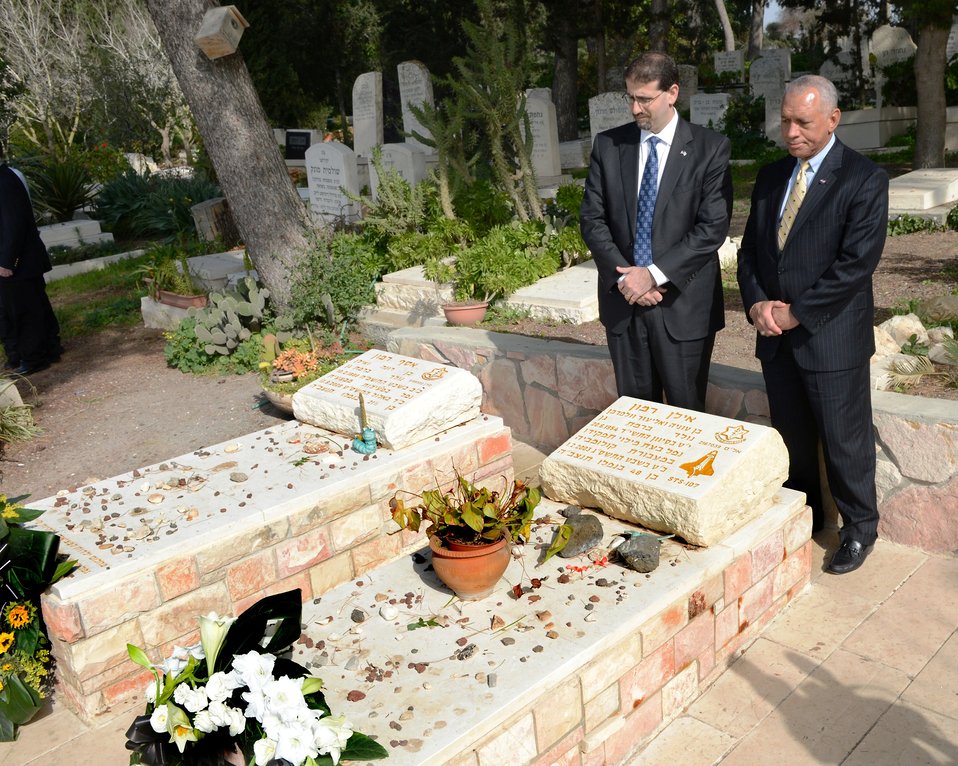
Administrator Bolden and Ambassador Shapiro Visit the Graves of of Ilan and Asaf Ramon in Nahalal Cemetery

NASA Administrator Charles Bolden and U.S. Ambassador to Israel Daniel Shapiro visit the graves of Ilan and Asaf Ramon in Nahalal Cemetery and lay a wreath on January 28, 2013. The Administrator is on a four-day visit to Israel at the invitation of the Israel Space agency.